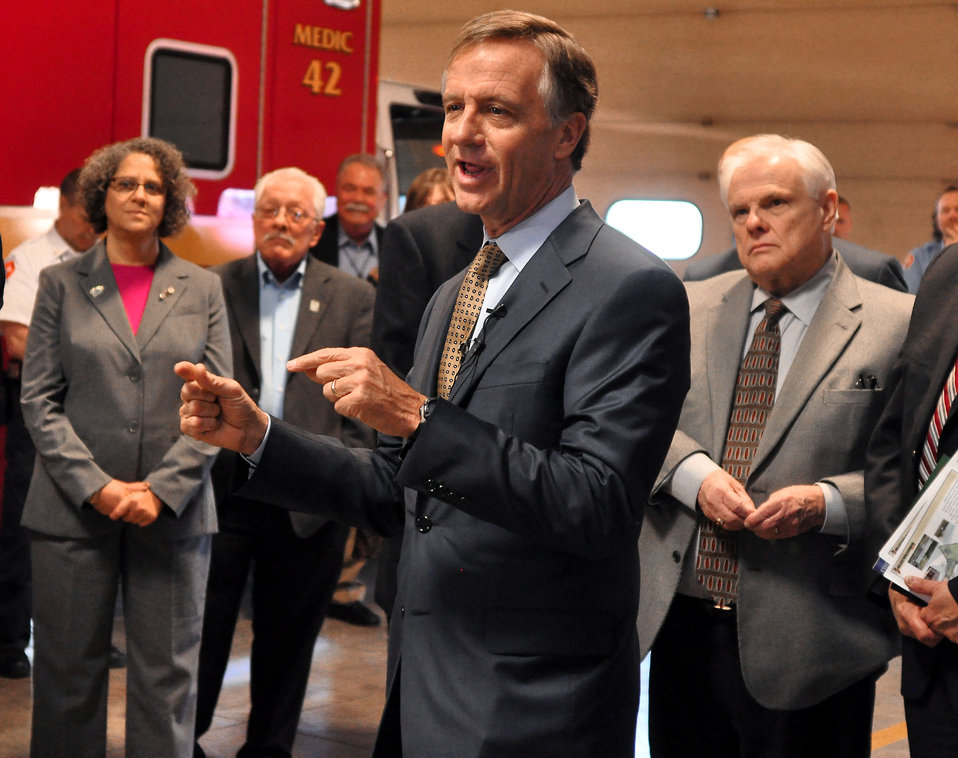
Gov. Bill Haslam Visit to ETTP 2014 Oak Ridge

14-037 DOE photo Lynn Freeny 3-21-2014 Oak Ridge Tennessee